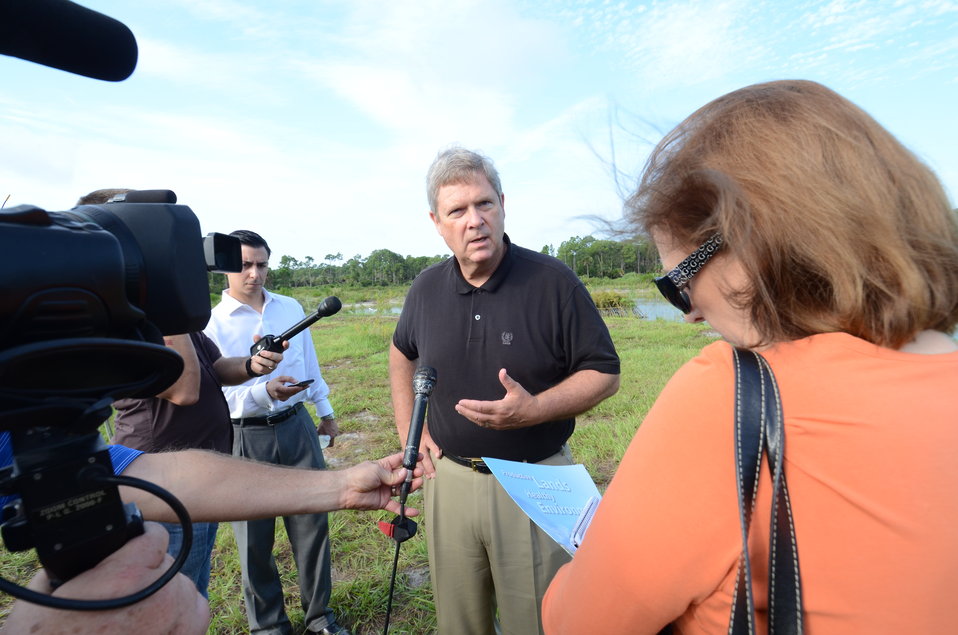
Agriculture Secretary Tom Vilsack answers questions from reporters after touring the Northern Everglades Watershed in Palm Beach County, Florida on August 11, 2011. Earlier, Vilsack announced $100 million in financial assistance to acquire permanent easements from eligible landowners in four counties to assist with wetland restoration on nearly 24,000 acres of agricultural land. The wetland restoration will reduce the amount of surface water leaving the land, slowing water runoff and the concentration of nutrients entering the public water management system and ultimately Lake Okeechobee and the Everglades.